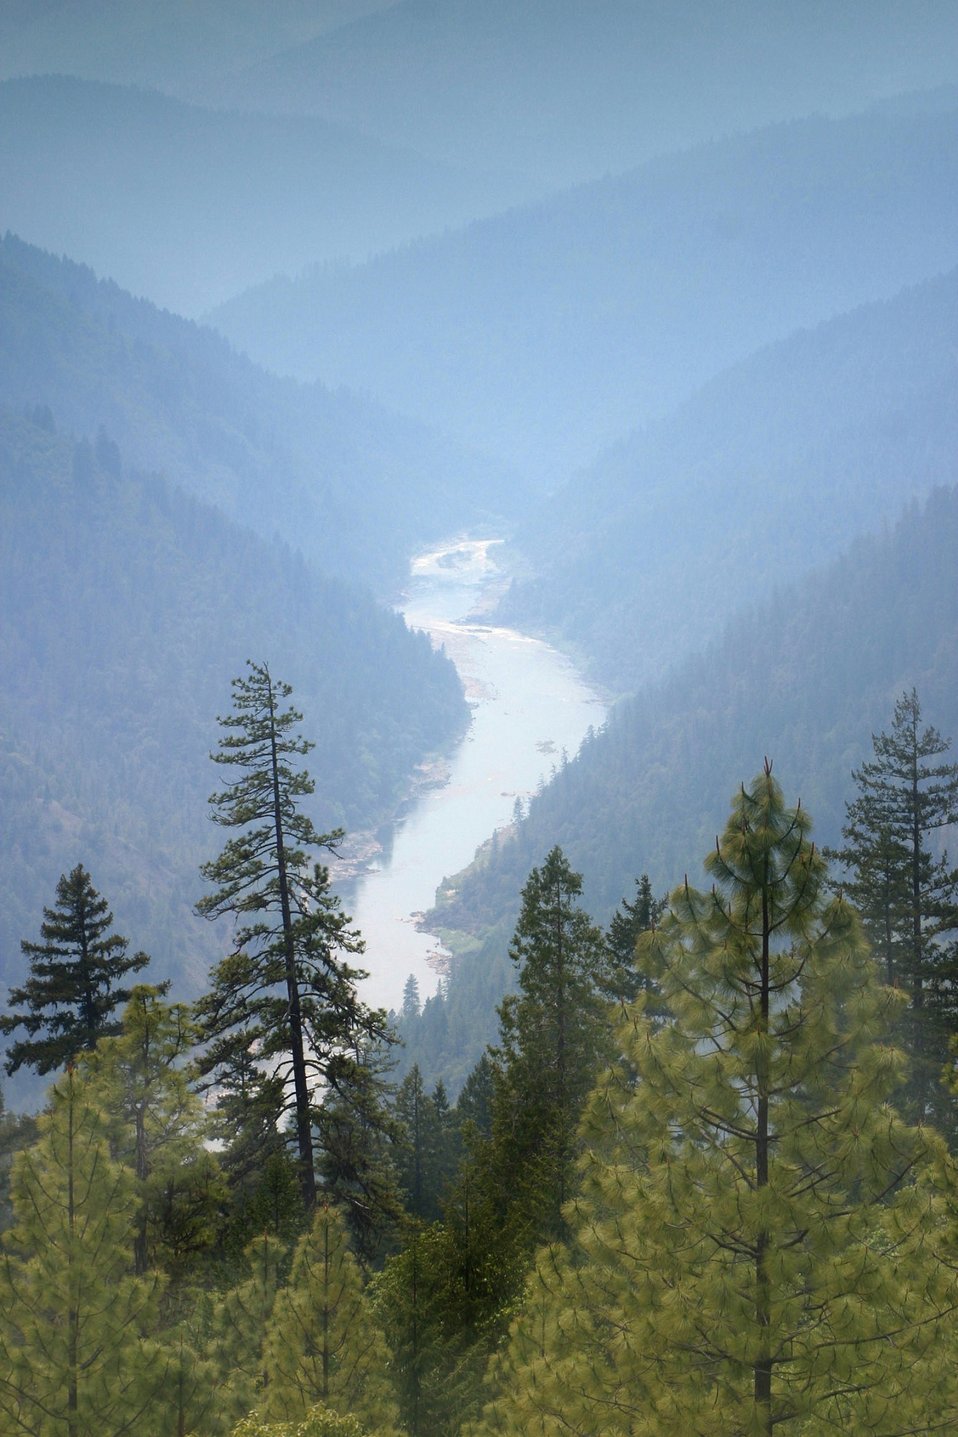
Wild section of the Rogue River from Grave Creek to Foster Bar May 19 to May 22.